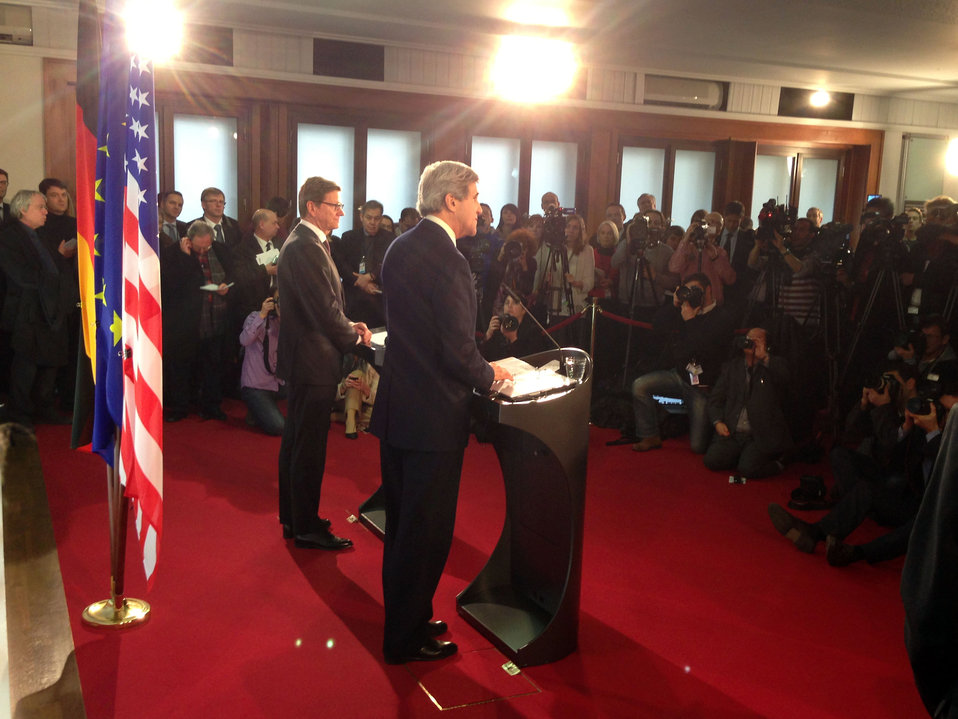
Secretary Kerry and German Foreign Minister Westerwelle Address Reporters

U.S. Secretary of State John Kerry holds a joint press conference with German Foreign Minister Guido Westerwelle in Berlin, Germany, February 26, 2013.